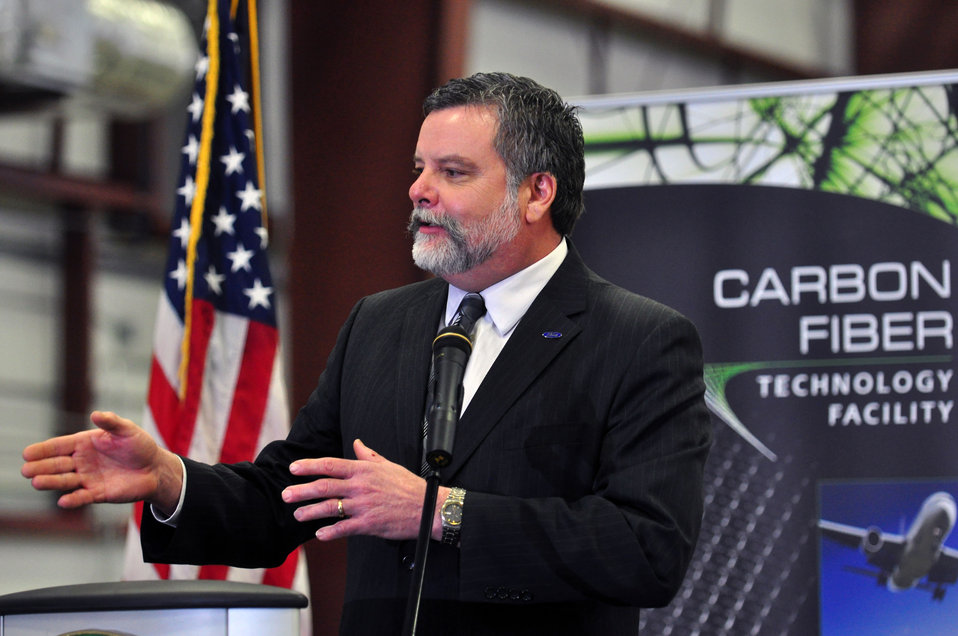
Carbon Fiber Technology Facilty Open House Oak Ridge Tennessee

13-025 DOE photo Lynn Freeny